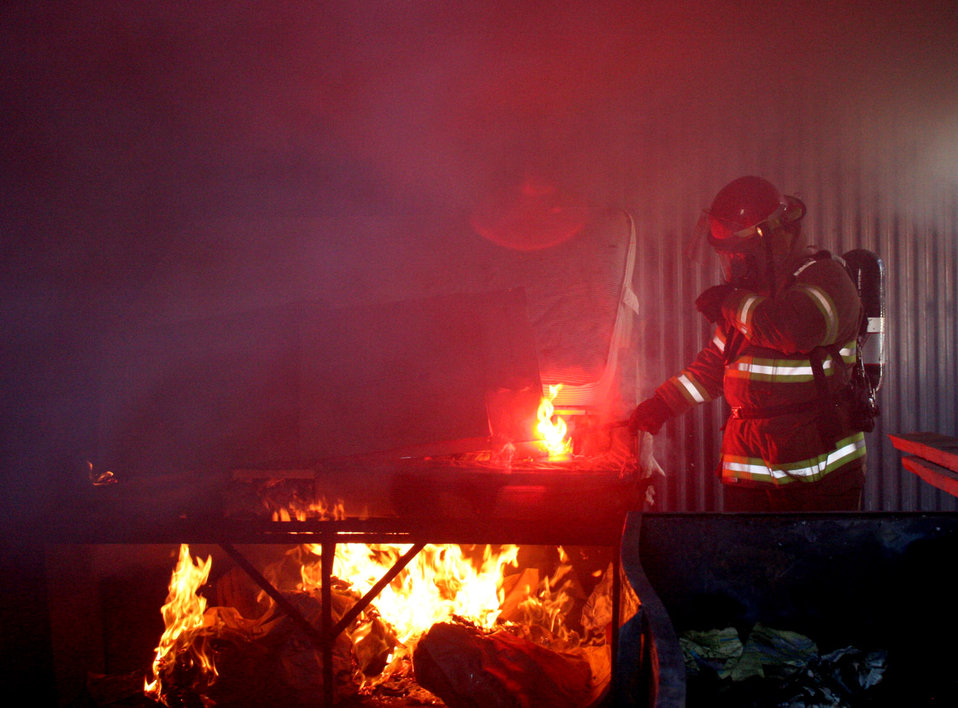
Firefighters: more than fighting blazes

MOUNTAIN HOME AIR FORCE BASE, Idaho -- Fred Ellis starts the fire for a